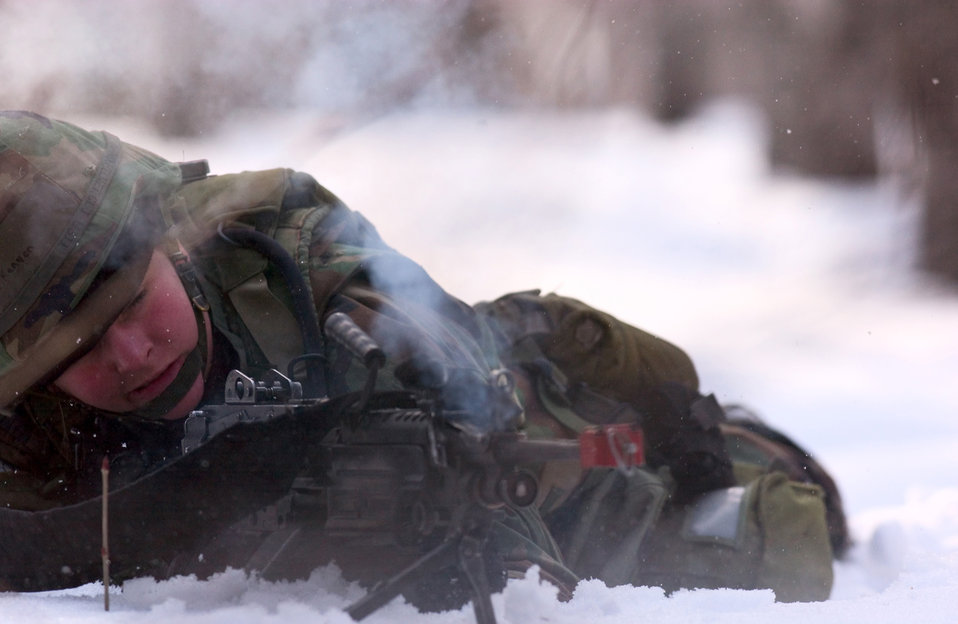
Gunsmoke

ELMENDORF AIR FORCE BASE, Alaska -- Smoke rises from an M-60 as Airman 1st Class Jessie Kenyon engages opposing forces during exercise Polar Force 05-3 here April 4. Airman Kenyon is a Security forces Airmen with 3rd Security Forces Squadron.